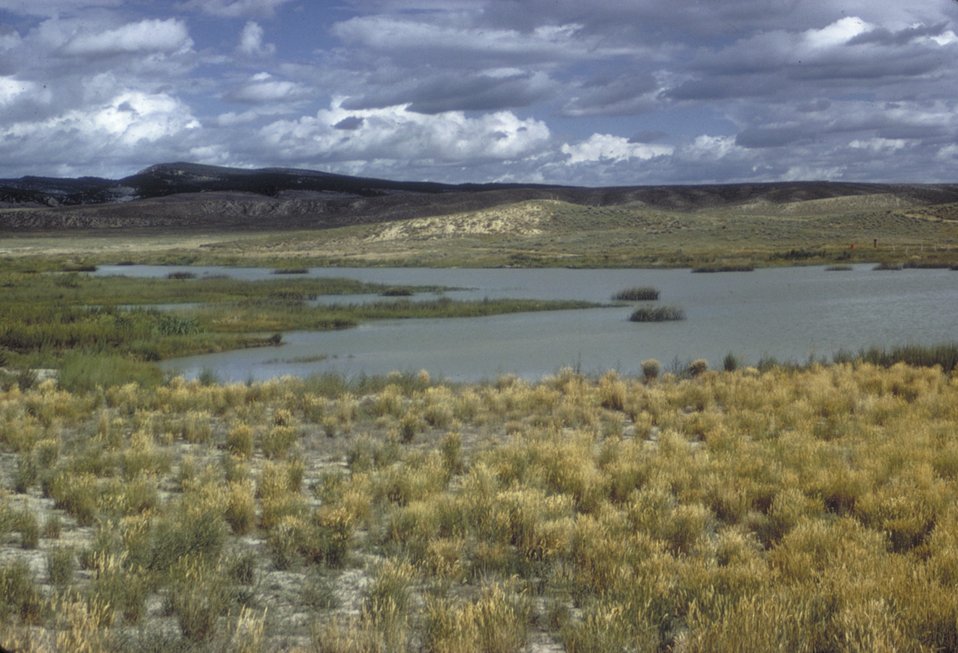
Scenic of lake and sagebrush.